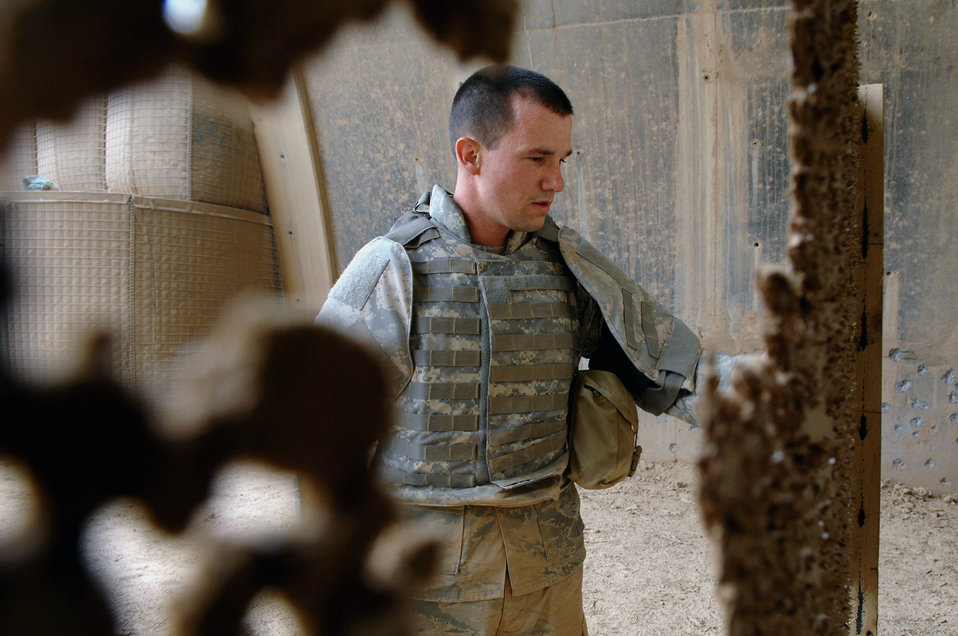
Zeroing in

Airman Chad McCambridge checks his silhouette target after firing 10 rounds with an M-4 April 30 at Balad Air Base, Iraq. By being completely comfortable and familiar with a weapon, reaction time during an emergency situation is more timely. Airman McCambridge is assigned to the 332nd Expeditionary Security Forces Squadron and deployed from Royal Air Force Lakenheath, England.